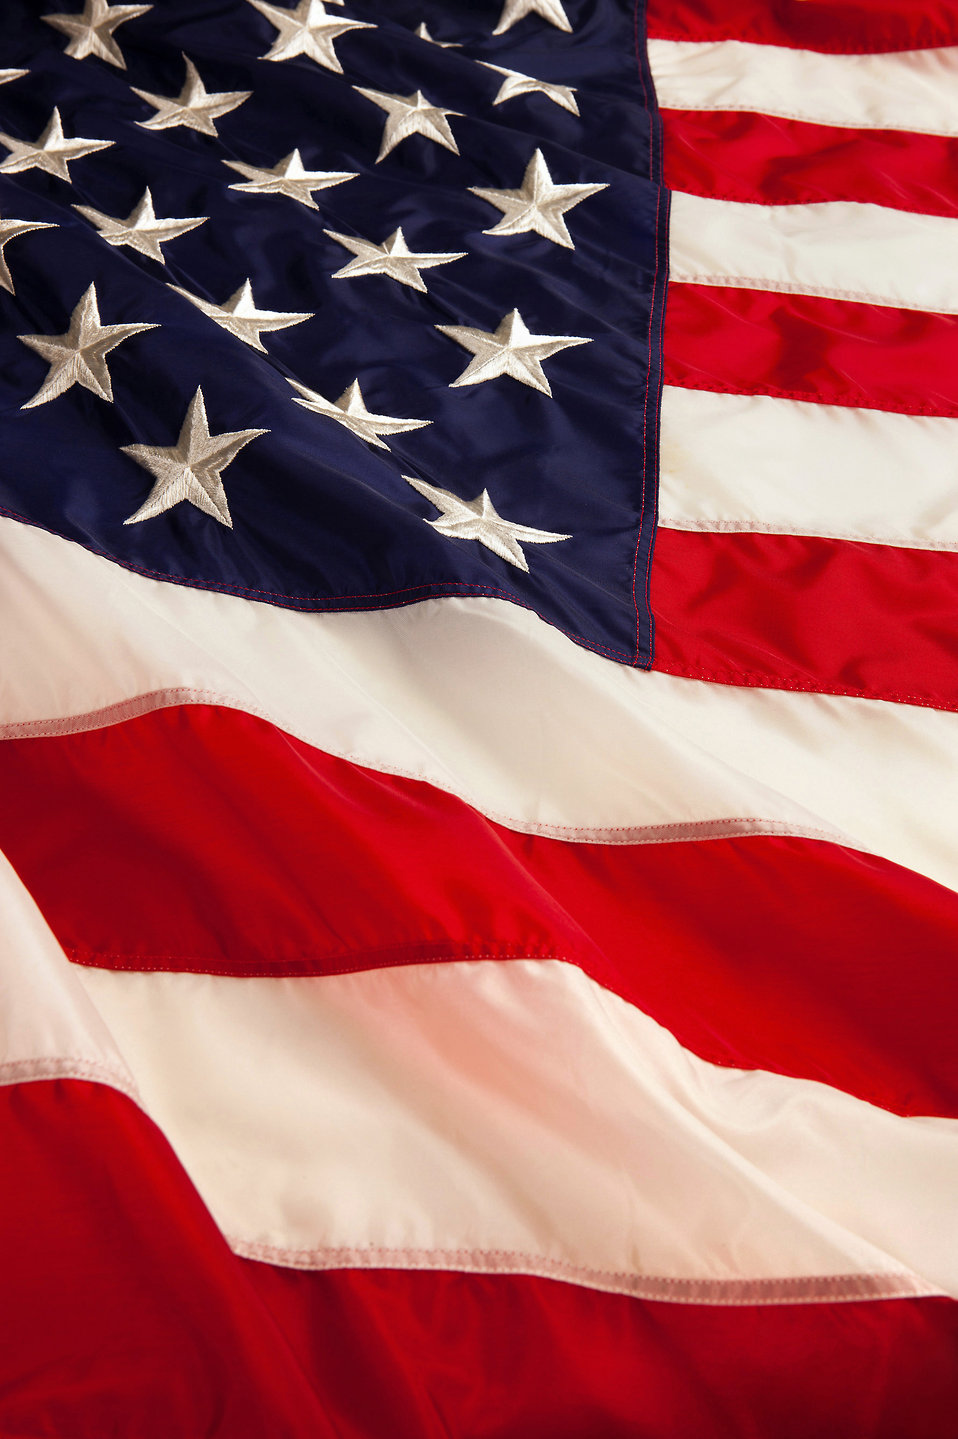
A close up of U.S. flag flying on Feb. 2, 2004. The U.S. Department of Agriculture (USDA) and the U.S. Department of Defense (DOD) have been partners in the fight against disease-spreading insects since before World War II. In 2004, the Deployed War-Fighter Protection (DWFP) research program was implemented to prevent or defend U.S. troops from insect attacks. The story on 'DWFP: A Battle Plan To Protect U.S. Troops From Harmful Insects' lists some of ARS’s many DWFP research contributions that already benefit or may eventually benefit both soldiers and consumers.